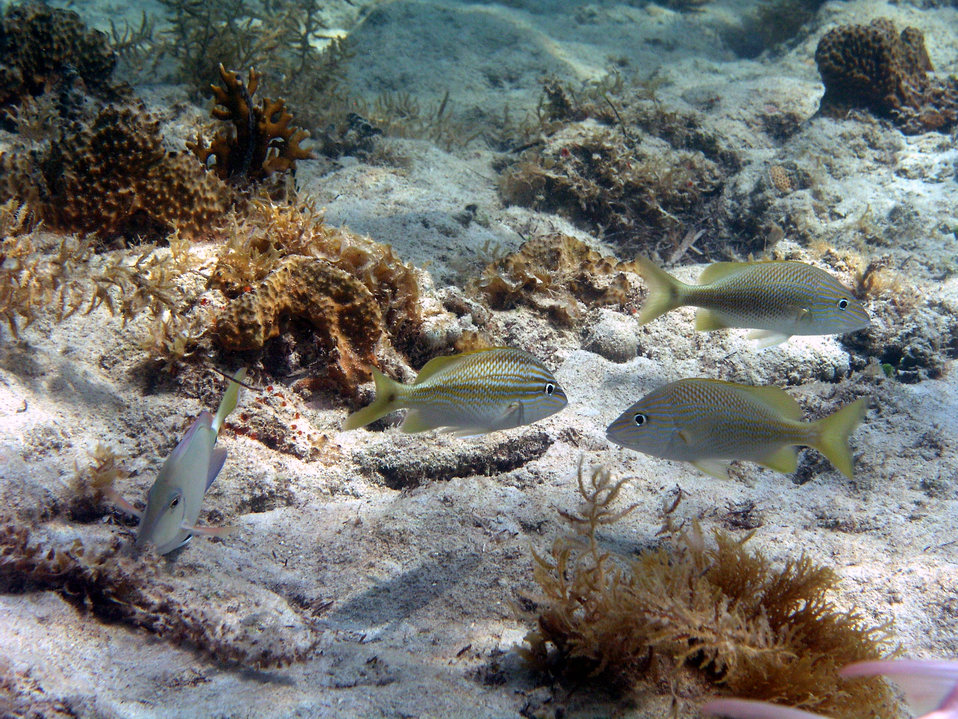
White grunt (Haemulon plumierii)